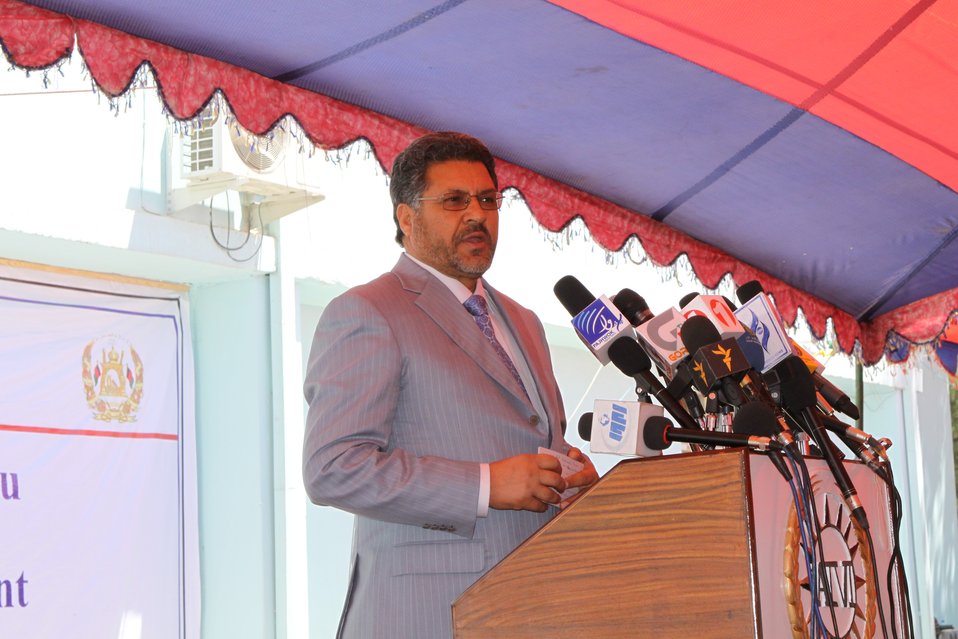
100522 ATVI Graduation 066